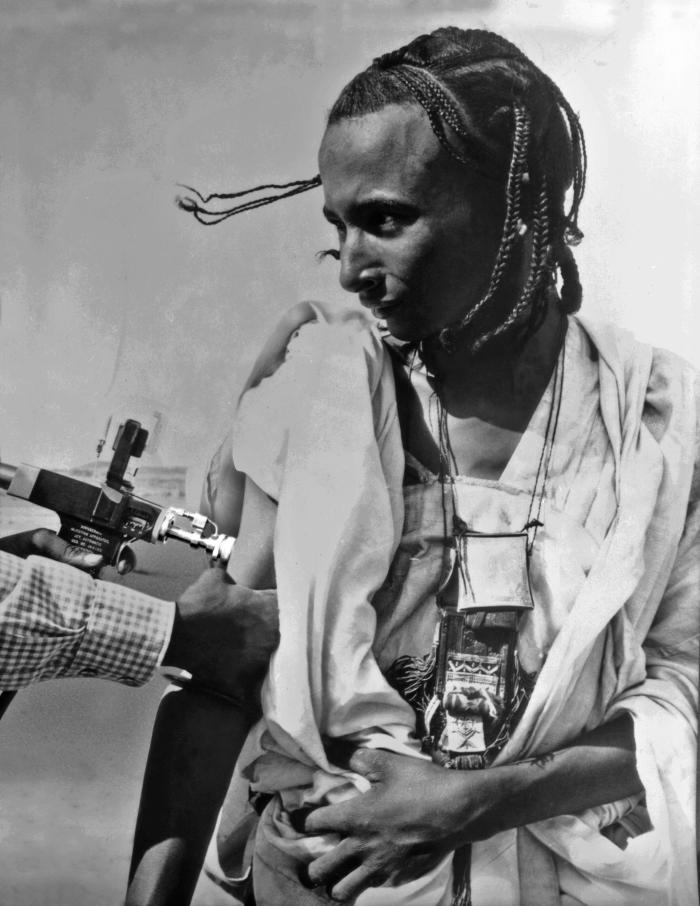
Photograph made during Smallpox Eradication and Measles Control Program in Niger, W. Africa, February, 1969.